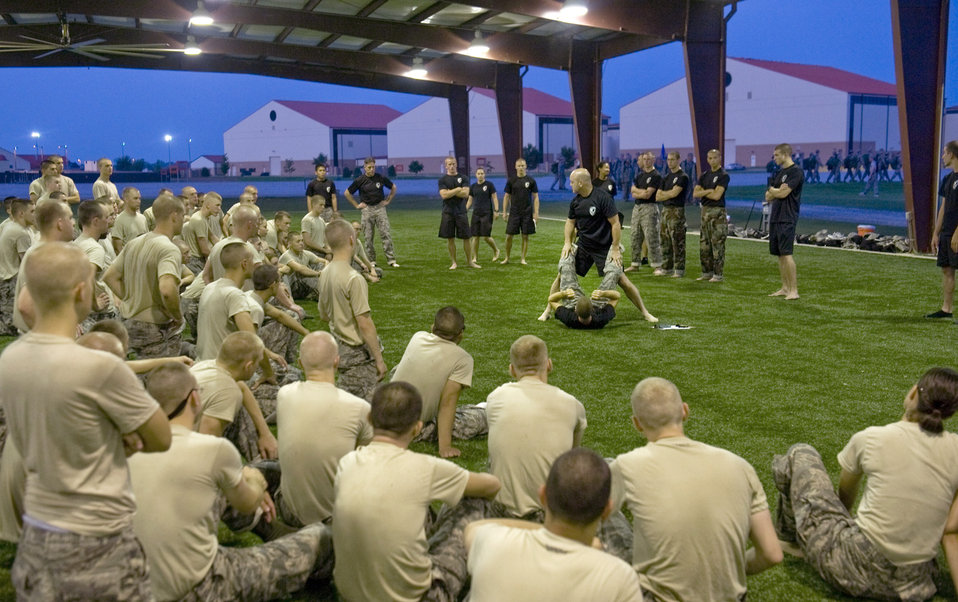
Instructors teach ROTC cadets defense techniques

ROTC cadets watch as combative instructors teach them non-lethal, close-range combat techniques during their summer camp at Maxwell Air Force Base, Ala., July 22, 2010. The cadets are participating in a month-long summer camp which prepares them to becoming the future leaders of tomorrow's Air Force.